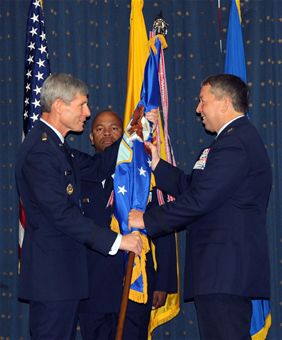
New Air Force chief of safety

Air Force Chief of Staff Gen. Norton Schwartz (left) passes the Air Force Safety Center guidon to Maj. Gen. Gregory A. Feest in a change-of-command ceremony on Sept. 1, 2010, at Kirtland Air Force Base, N.M. General Feest, now the Air Force chief of safety also is the new safety center commander.